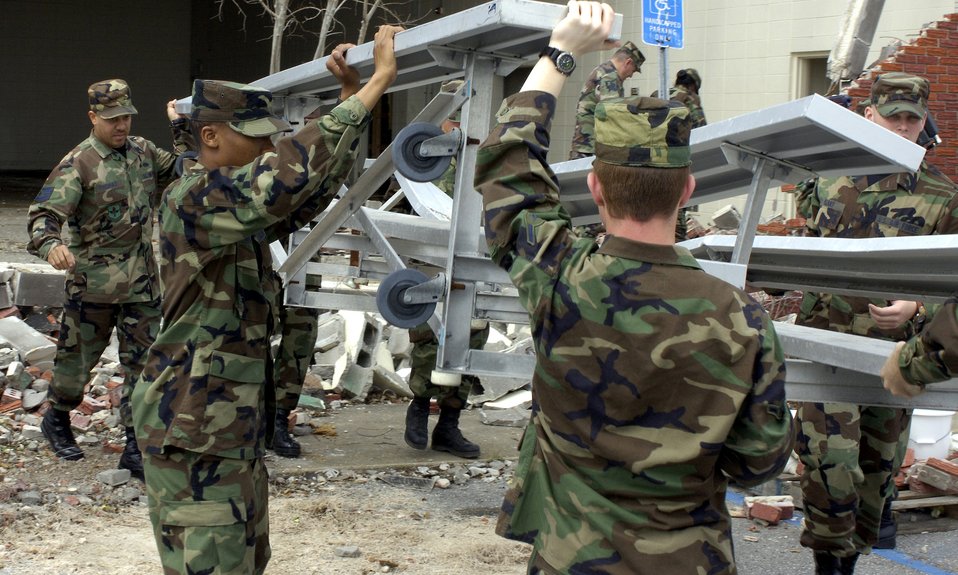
Keesler Airmen answer call for help

Airmen from Keesler Air Force Base, Miss., clears debris from a site designated to be a new Salvation Army center in Gulfport, Miss. Airmen from Keesler AFB have logged more than 38,000 volunteer hours since Hurricane Katrina.